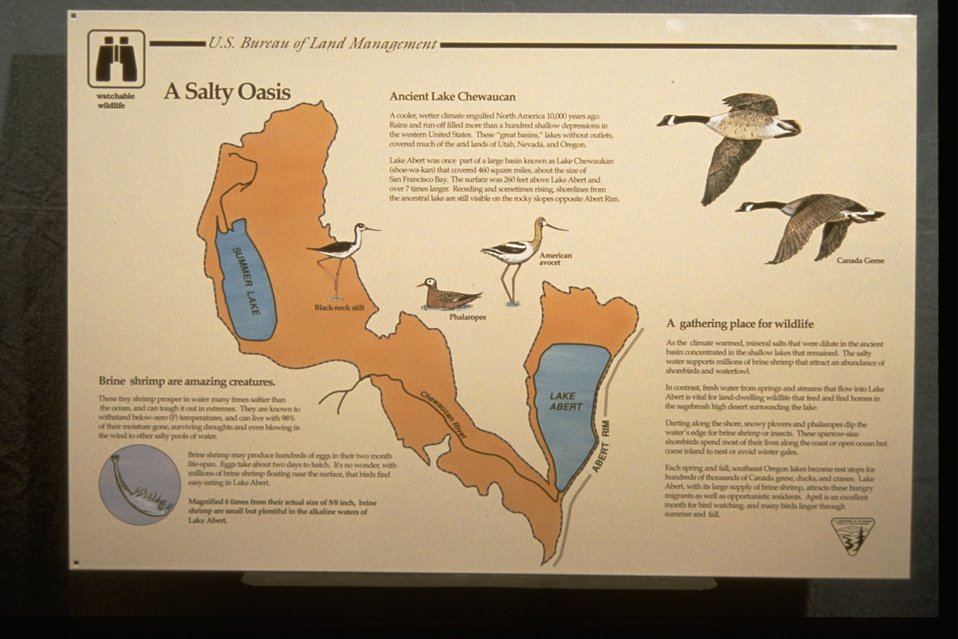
Close-up interpretive panel of Abert Lake and Summer Lake.